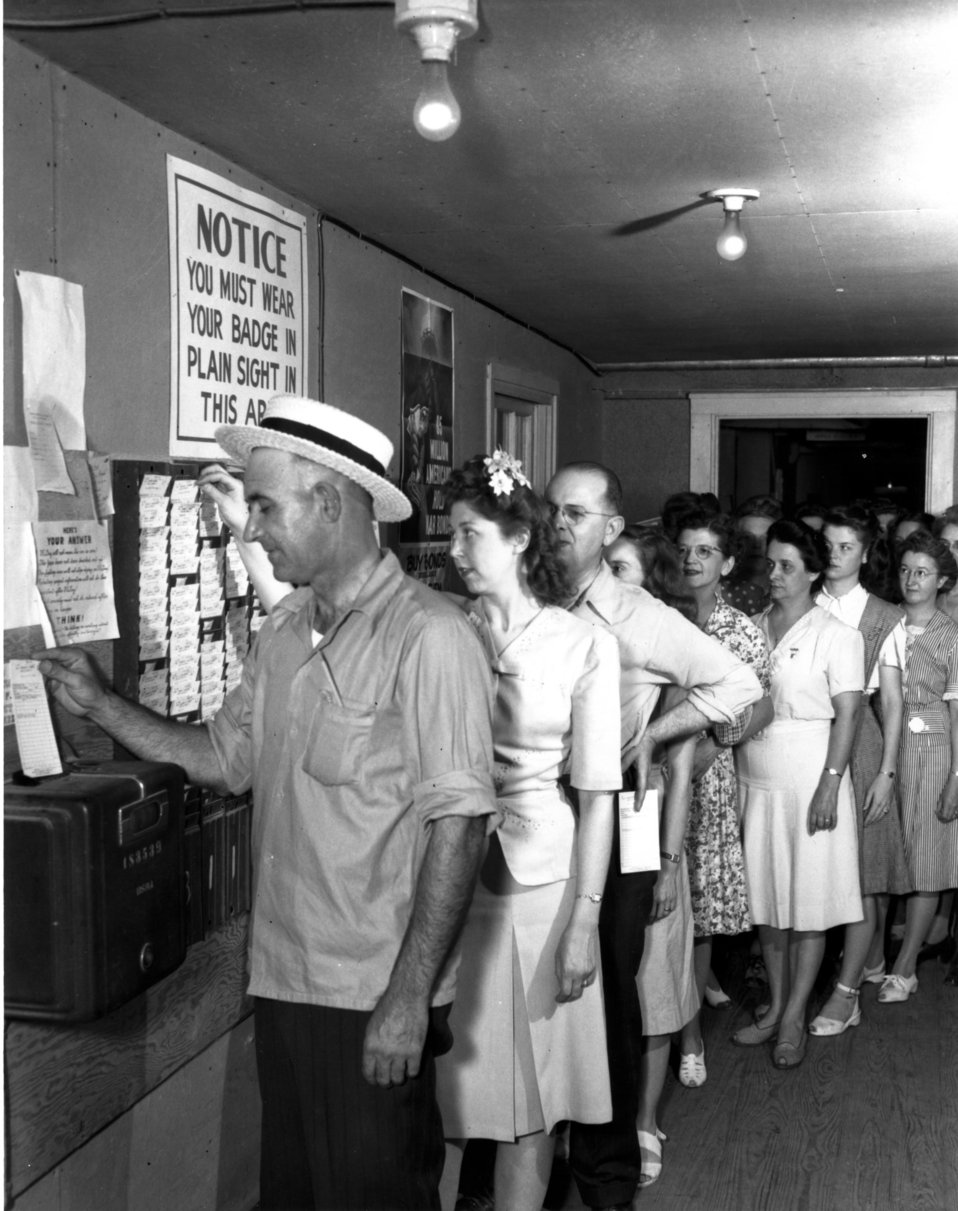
Daily Life at Oak Ridge